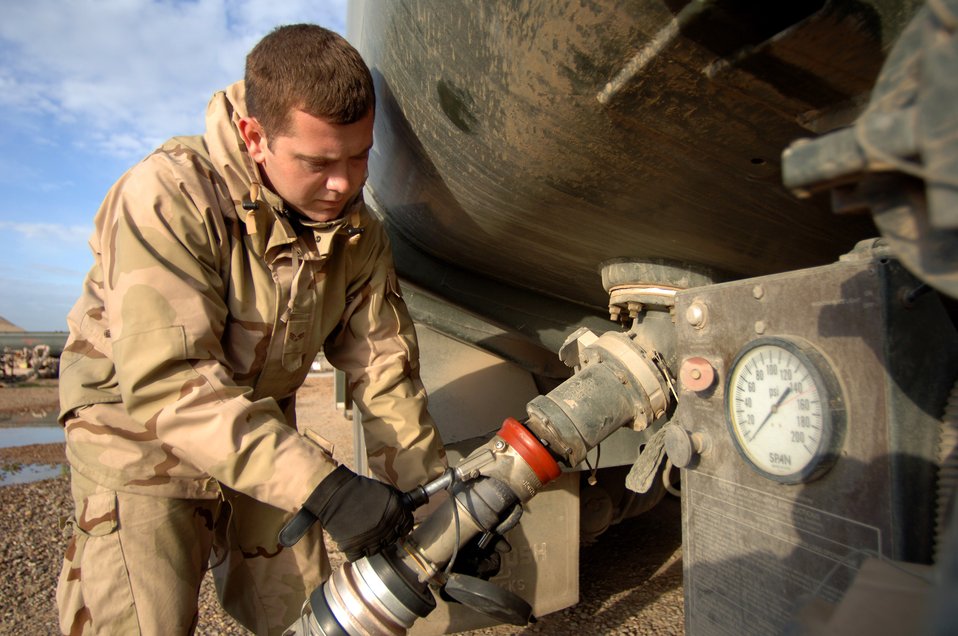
Gas and go

Senior Airman Gary Grammer disconnects the hose from a refueling truck Feb. 10 after filling up from a 210,000-gallon portable bladder at Balad Air Base, Iraq. Airman Grammer is assigned to the 332nd Expeditionary Logistics Readiness Squadron and deployed from Dover Air Force Base, Del.